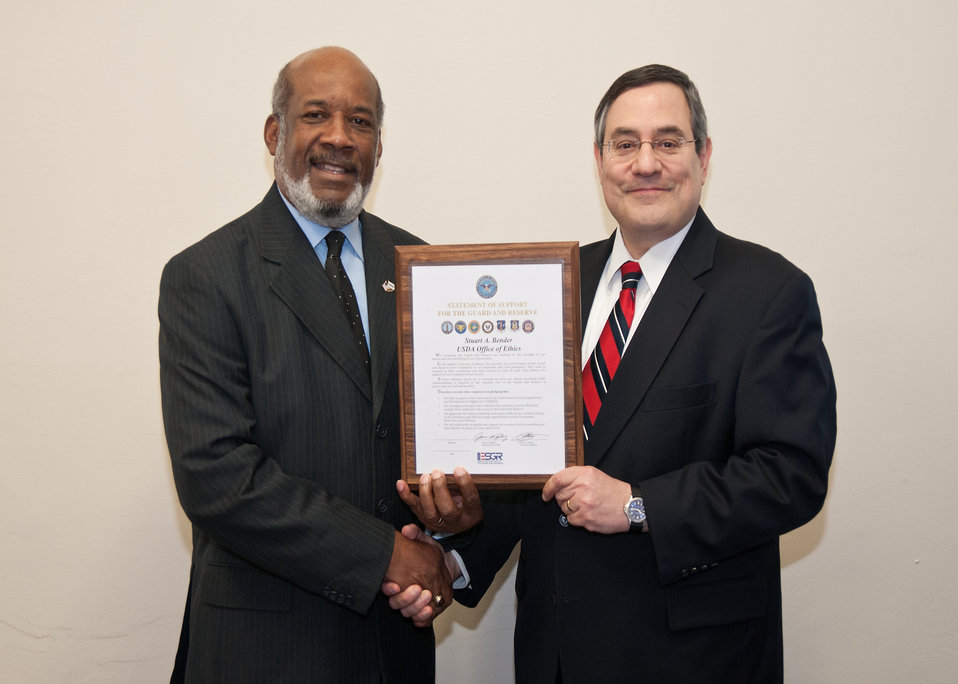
Lewis Williams (left), District of Columbia Committee for Employer Support of the Guard and Reserve (ESGR) and Stuart Bender (right), Director, United States Department of Agriculture Office of Ethics, Office of Human Resources Management. Bender received the Patriot Award from on behalf of the Department of Defense. The award recognizes the outstanding support of Mr. Bender to the Reserve Component of the United States Military Forces.